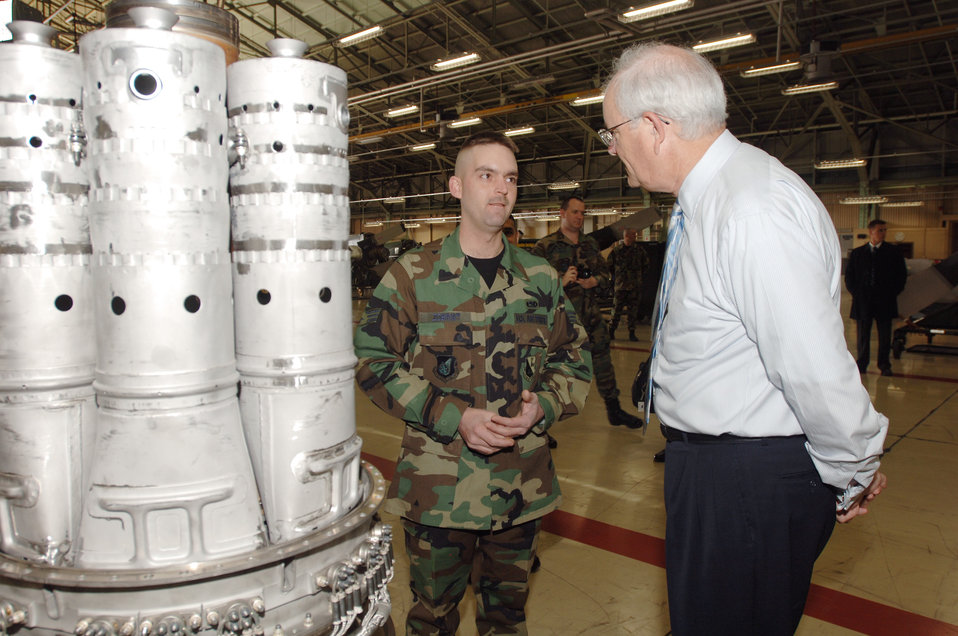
SECAF visits mainland Japan

Secretary of the Air Force Michael W. Wynne receives a briefing from Senior Airman Daryl Zobrist on his job at the C-130 Hercules Engine Shop, 374th Maintenance Squadron, Yokota Air Base, Japan, on Friday, March 24, 2006.